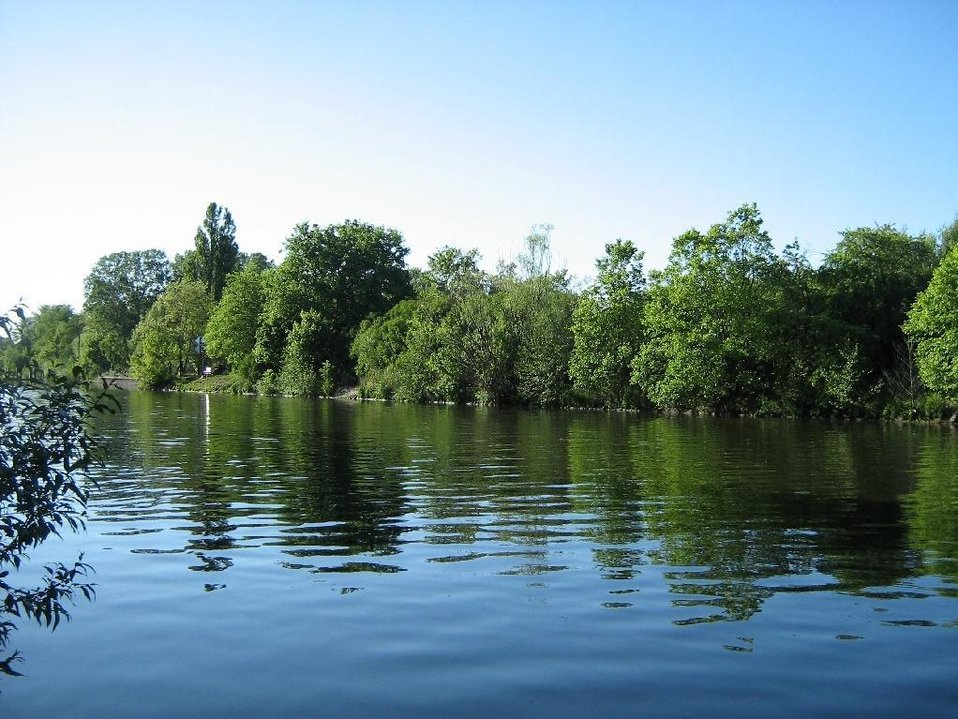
Deutsch: Der Sacrow-Paretzer-Kanal bei Nedlitz/Potsdam (Brandenburg, Germany)